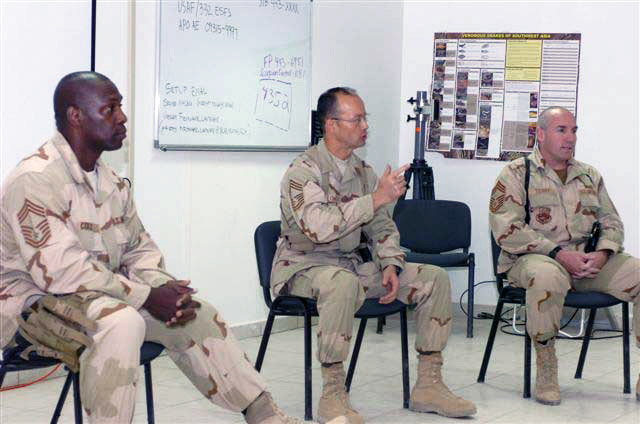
Combat leadership course takes PME to next level

Chief master sergeants share their insight and experiences with junior noncommissioned officers during recent Combat Leadership Course Dec. 6 at Balad Air Base, Iraq. The five-hour course focused on combat environment issues such as situational awareness and performing combat missions outside the wire.